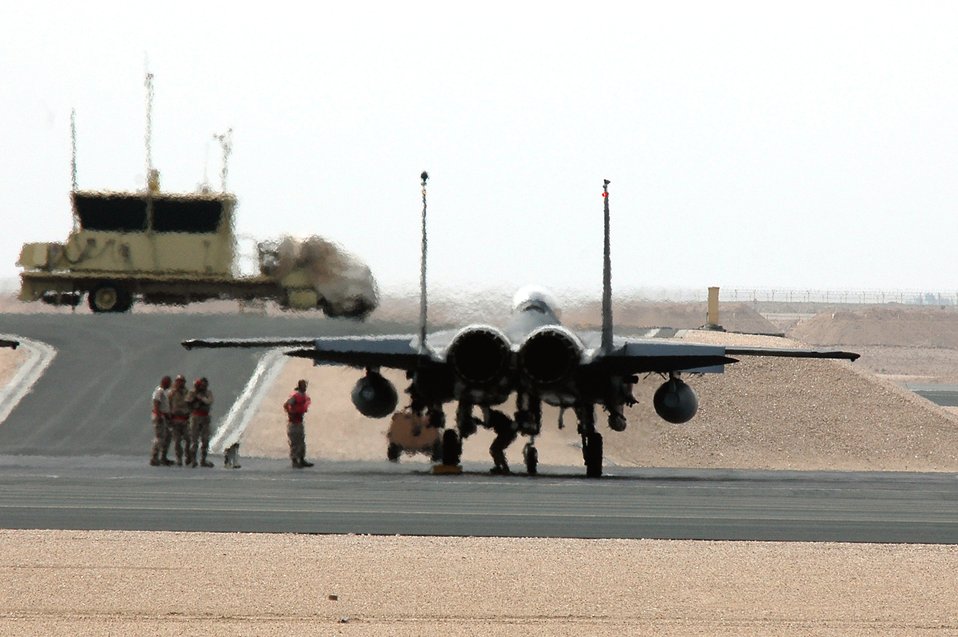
Soaring Eagles

An F-15 Strike Eagle sits at the end of a runway in Southwest Asia for last-minute safety and armament checks Dec. 11. The F-15s are deployed to the 494th Expeditionary Fighter Squadron in support of Operation Iraqi Freedom. The 494th EFS was the first unit to fly the guided bomb unit 39/B small diameter bomb into combat in October. The new bomb, the first of its kind in the Air Force inventory, gives aircrews the ability to destroy targets that would normally be passed over due to the proximity of friendly troops, civilians, structures or personal property.